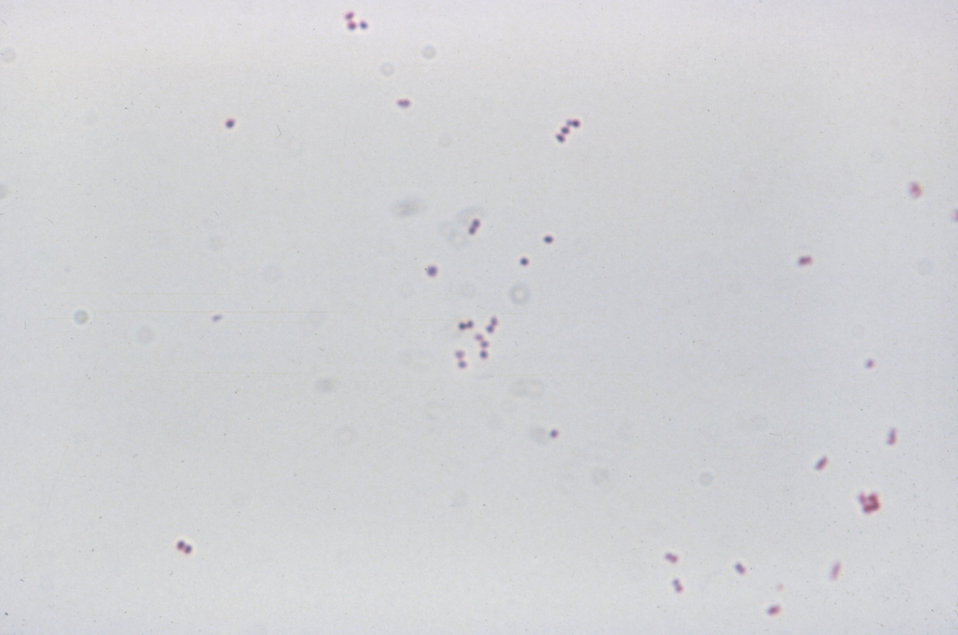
This photomicrograph depicts Neisseria meningitidis Group-B bacteria using a gram-stain from a culture; Magnified 1150X.